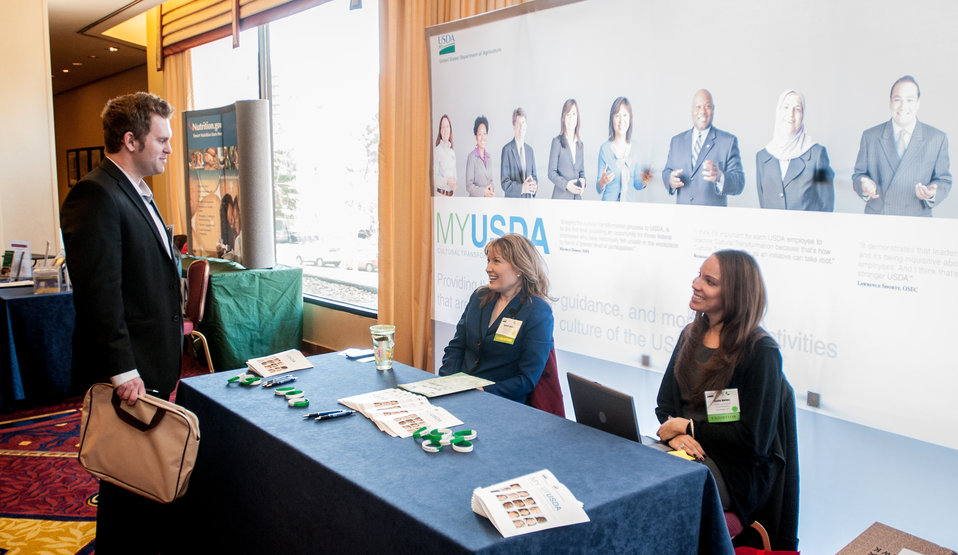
MyUSDA Cultural Transformation information booth during the 2013 Agricultural Outlook Forum, held at the Crystal Gateway Marriott Hotel, Arlington, VA on Thursday, Feb. 21, 2013. This annual Forum brings together producers, policymakers, and business, government, and industry leaders to meet, exchange ideas, and discuss timely agriculture issues.